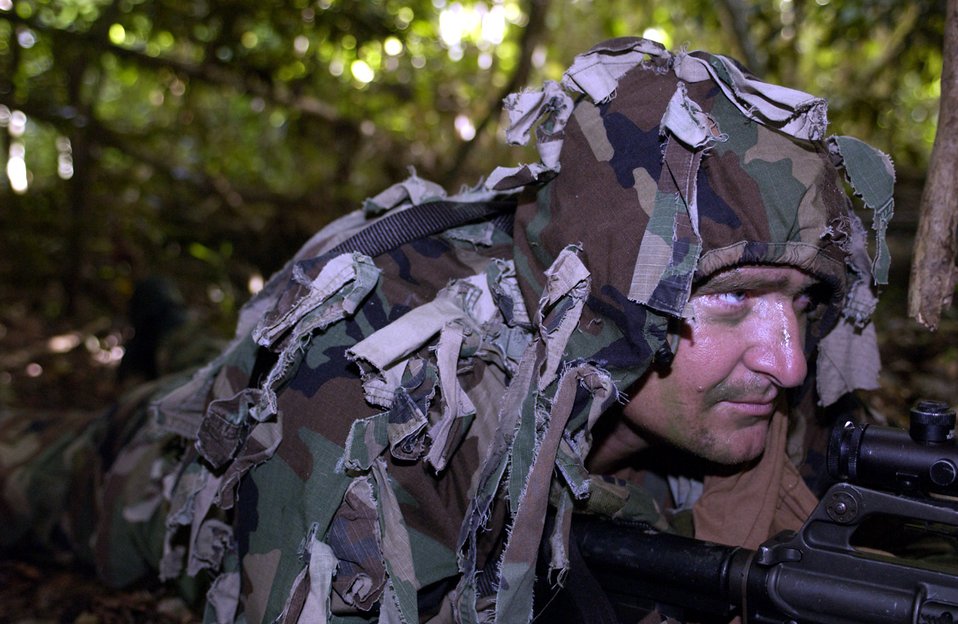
Hide and seek

ANDERSEN AIR FORCE BASE, Guam -- Staff Sgt. Ronald White hides in the jungle here before a mock attack during Exercise Jungle Bull recently. He is assigned to the 36th Civil Engineer Squadron.